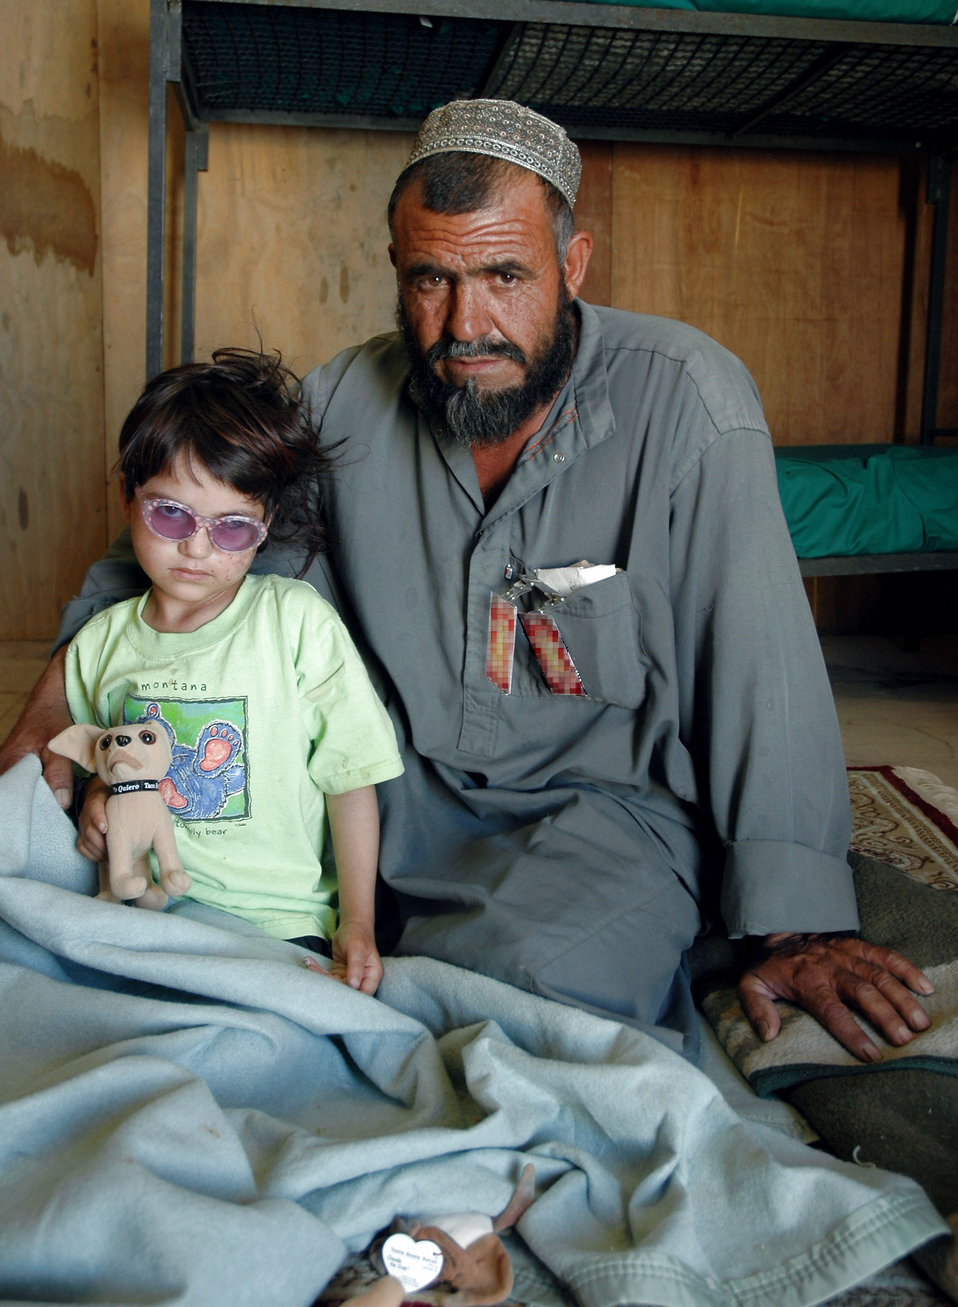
Coalition doctors remove tumor, save Afghan girl's life

Gulzana Haqim and her father, Abdullah, pose for a photo July 11 during her recovery period at Bagram Air Field, Afghanistan. Gulzana was diagnosed with a tumor over her eye -- an affliction that has an extremely low chance of survival in Afghanistan if not treated.